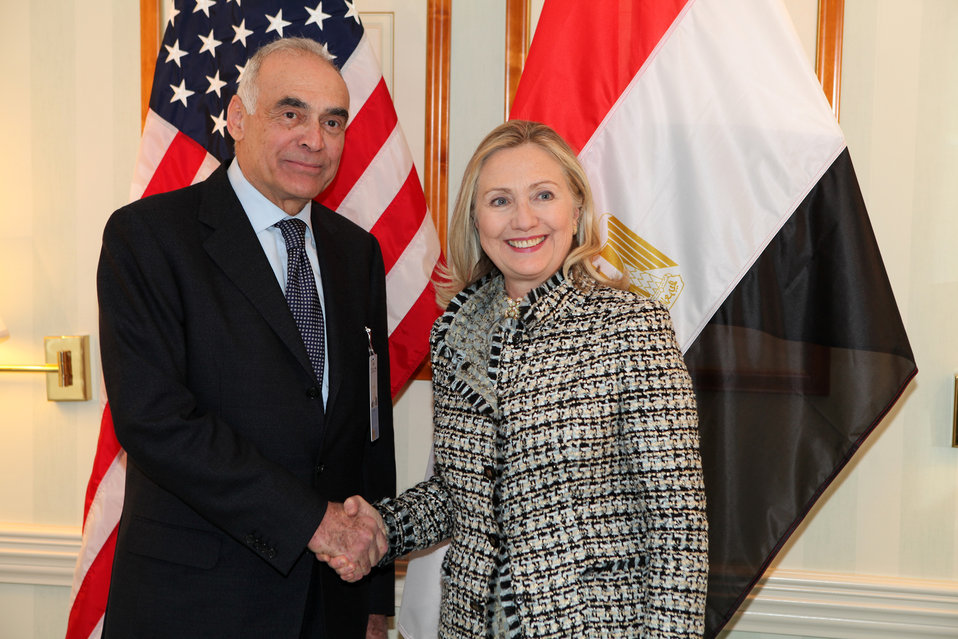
Secretary Clinton Meets With Egyptian Foreign Minister Amr

U.S. Secretary of State Hillary Rodham Clinton meets with Egyptian Foreign Minister Mohamed Amr in Munich, Germany, on February 4, 2012.